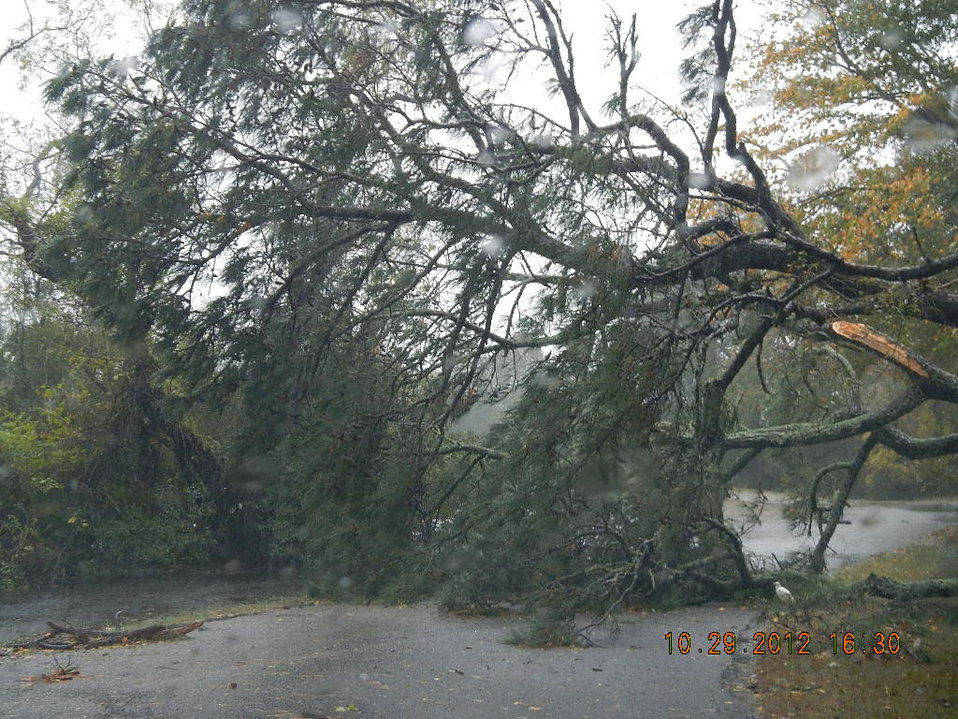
Downed tree at Chincoteague National Wildlife Refuge (VA)

Chincoteague National Wildlife Refuge sustained downed trees during Hurricane Sandy.